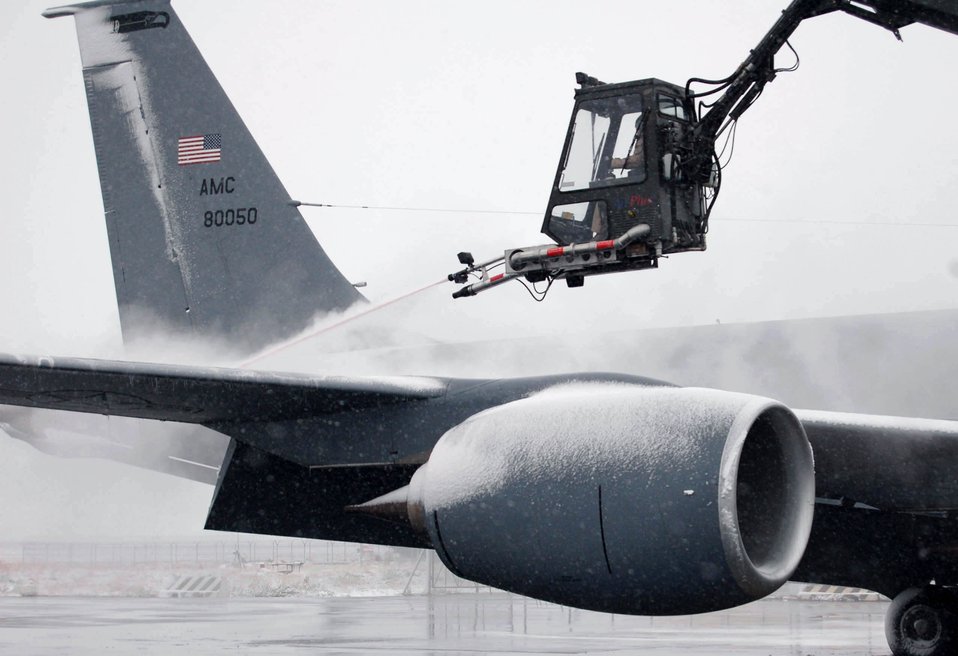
Winter comes to Manas

Senior Airman Ryan Saunders blasts the snow and ice off a KC-135 Stratotanker Nov. 21 at Manas Air Base, Kyrgyzstan, prior to the aircraft's next mission. This was the first snow of the season at Manas. Airman Saunders is deployed from Fairchild Air Force Base, Wash.